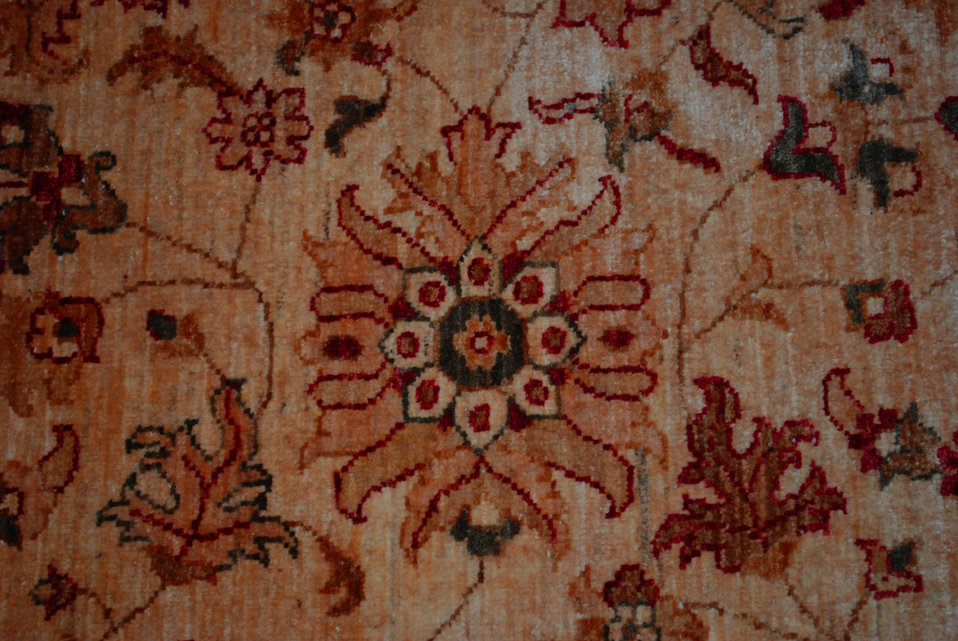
'On the Road' in Nangarhar Province